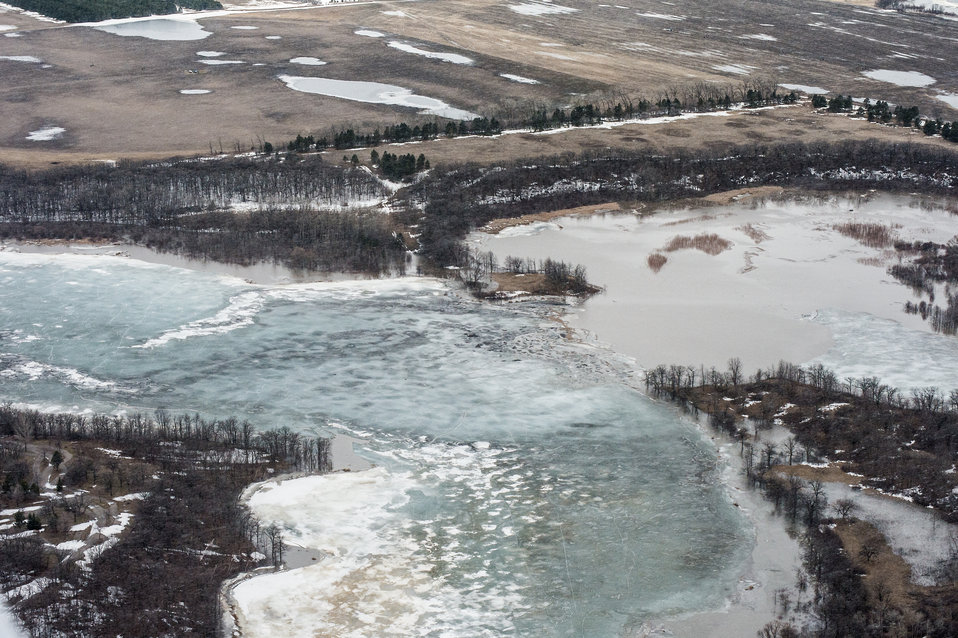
Renwick Dam, in Pembina County, ND, part of the Red River basin, on Wednesday, May 1, 2013. For information about this and other programs from the USDA Red River Basin Initiative (RRBI) please see www.mn.nrcs.usda.gov/news/features13/RRBI.html.